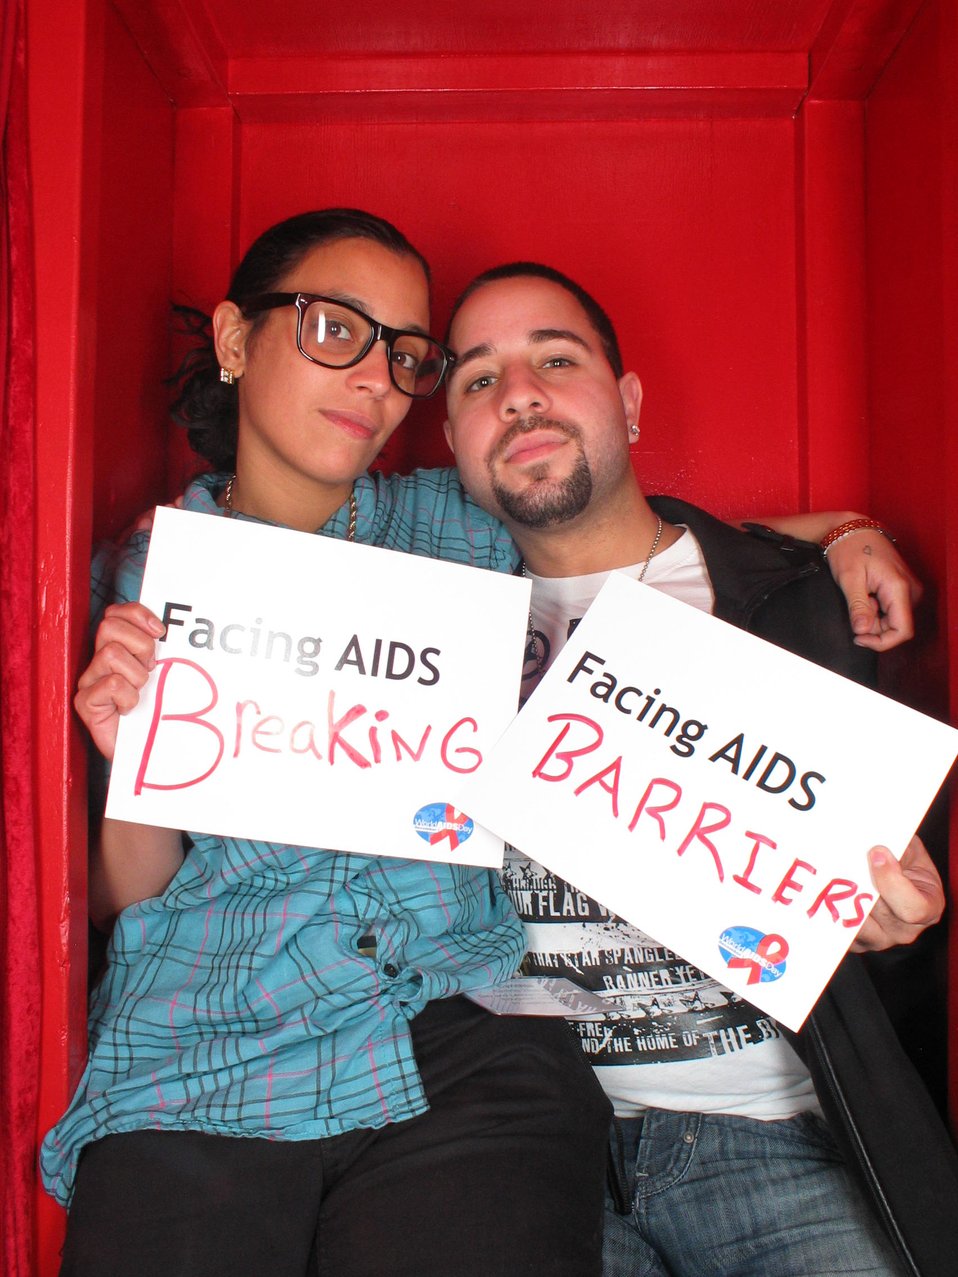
Facing AIDS breaking barriers